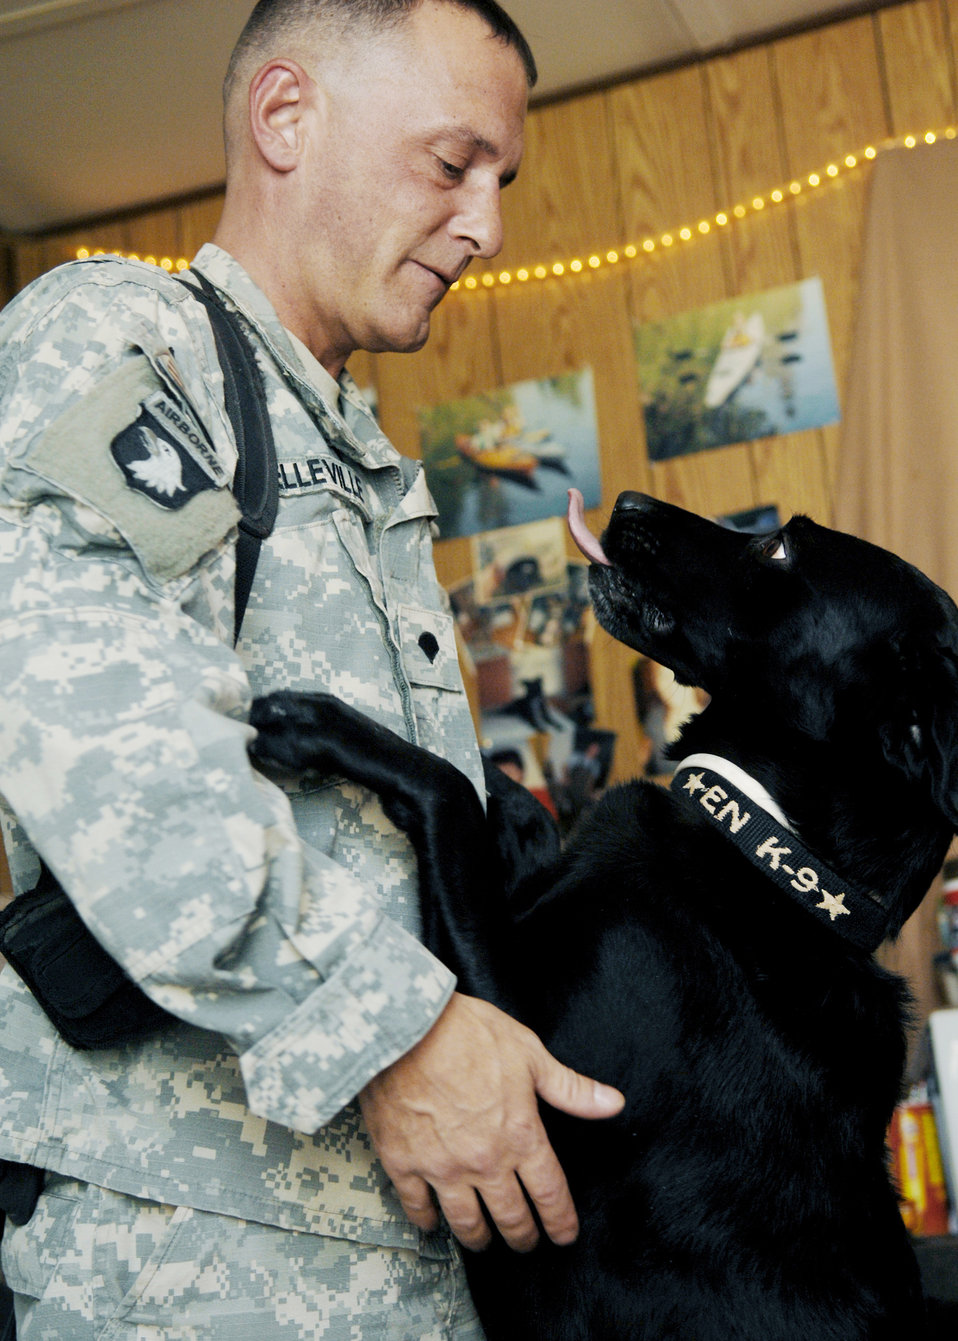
Servicemembers work 'out of the doghouse' at Joint Base Balad

Army Spc. Chris Belville spends time with his canine, Cookie, in his living quarters Aug. 28, 2009, at Joint Base Balad, Iraq. Specialist Belville is a 25th Infantry Division dog handler.